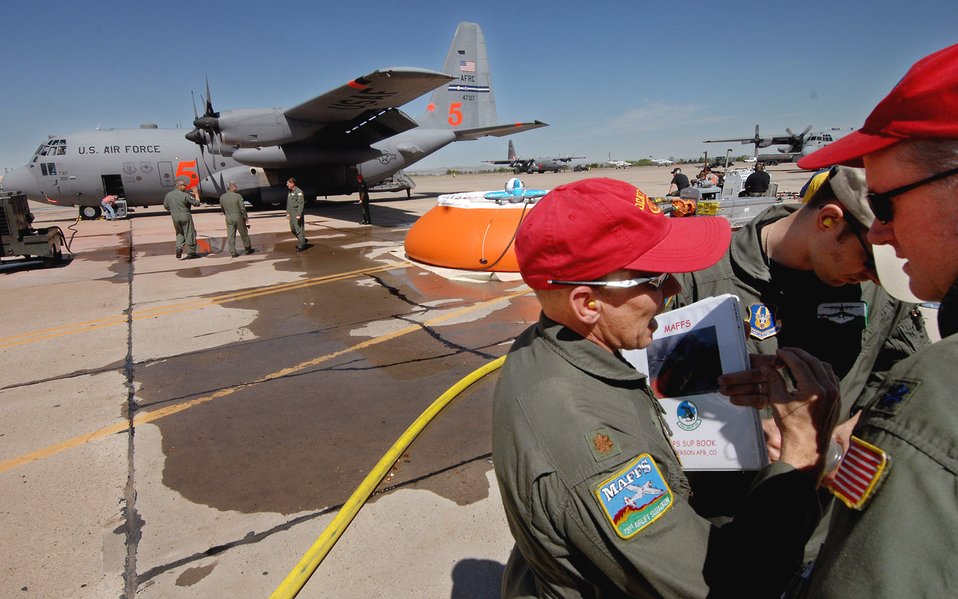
Air Force aerial firefighters train in New Mexico

Maj. Mark Steward, left, speaks with Maj. Robert Fairbanks and Lt. Col. Gary Carlton as C-130 Hercules aircraft are prepared to fly Modular Airborne Fire Fighting System training missions May 1 over New Mexico. These C-130 aircrew members from Air Force Reserve Command's 302nd Airlift Wing at Peterson Air Force Base, Colo., as well as other Air National Guard and Air Force Reserve crew members trained at the U.S. Forest Service's Albuquerque Air Tanker Base in New Mexico.